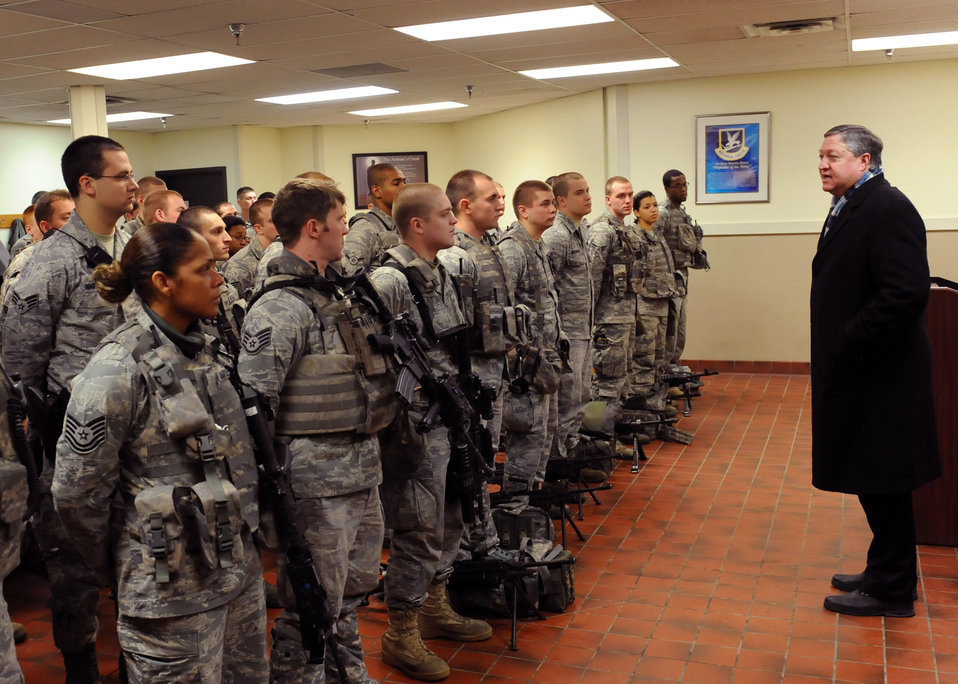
Secretary of the Air Force Michael Donley visits Minot Air Force Base

Secretary of the Air Force Michael Donley
addresses Airmen from the 5th Security Forces Squadron about the importance
of their mission and thanks the group for their service, Dec. 23, 2010. The
Secretary conducted the holiday visit to the base Dec. 23 and 24, 2010, and
met with Airmen and civilians at workcenters and facilities there, who
proudly showcased the Air Force's only dual-mission bomber and ICBM base.